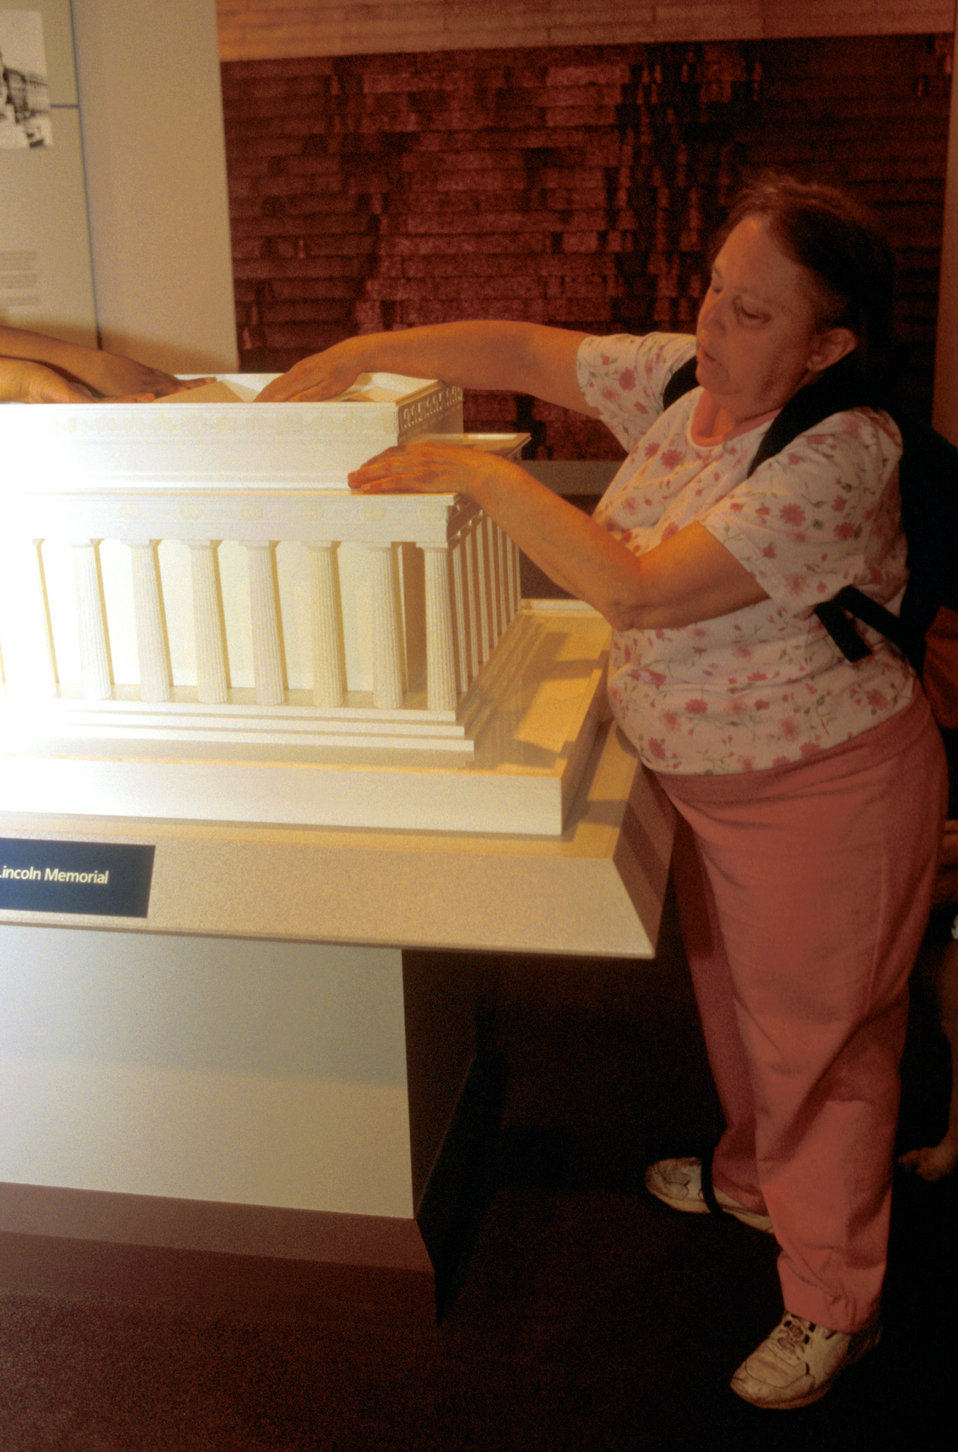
This was the third in a series of eight images (PHIL# 9088 - 9095) revealing the exhibits inside the U.S. National Building Museum, all of which could be touched by all visitors, including adults, children, and especially those who were mobility, or visually impaired. Consideration paid to those with such impairments during the designing of such a facility, enhanced the enjoyment experienced from all participants, as well as their overall learning experience. The exhibits were equipped with Braille descriptions, large print signs, and were mounted so that standing or seated users could both fully appreciate their experience. In this particular image, a woman was interacting with a replica of the Lincoln Memorial by touching the model. 'The Center for Universal Design (CUD) is a national research, information, and technical assistance center that evaluates, develops, and promotes accessible and universal design in housing, buildings, outdoor and urban settings and related products.'